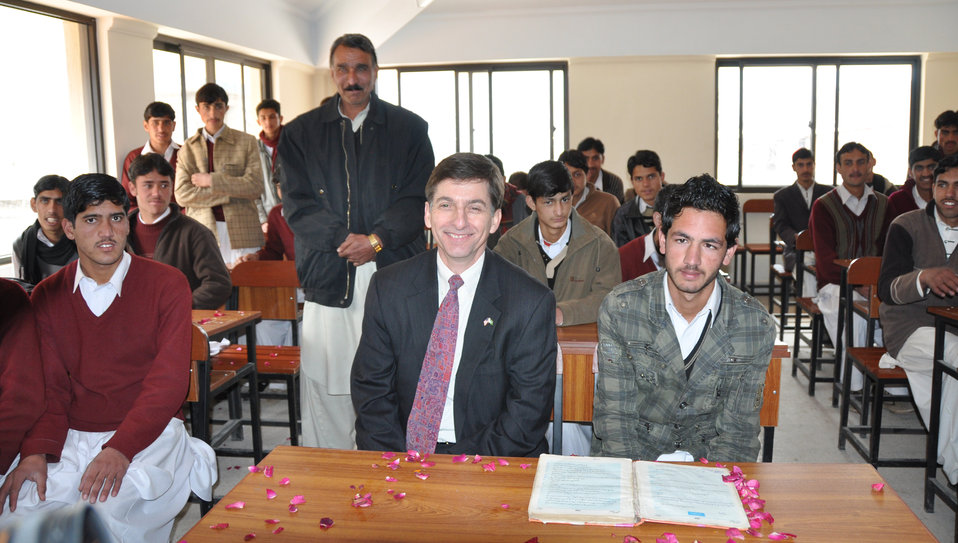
Government Boys’ Higher Secondary School Rera

Bagh, February 24, 2011 – USAID/Pakistan Mission Director Andrew Sisson with students in a classroom at the Government Boys’ Higher Secondary School Rera. The building was heavily damaged during the 2005 earthquake. Now the school has been reconstructed and furnished with assistance from the U.S. Agency for International Development and the Government of Pakistan.